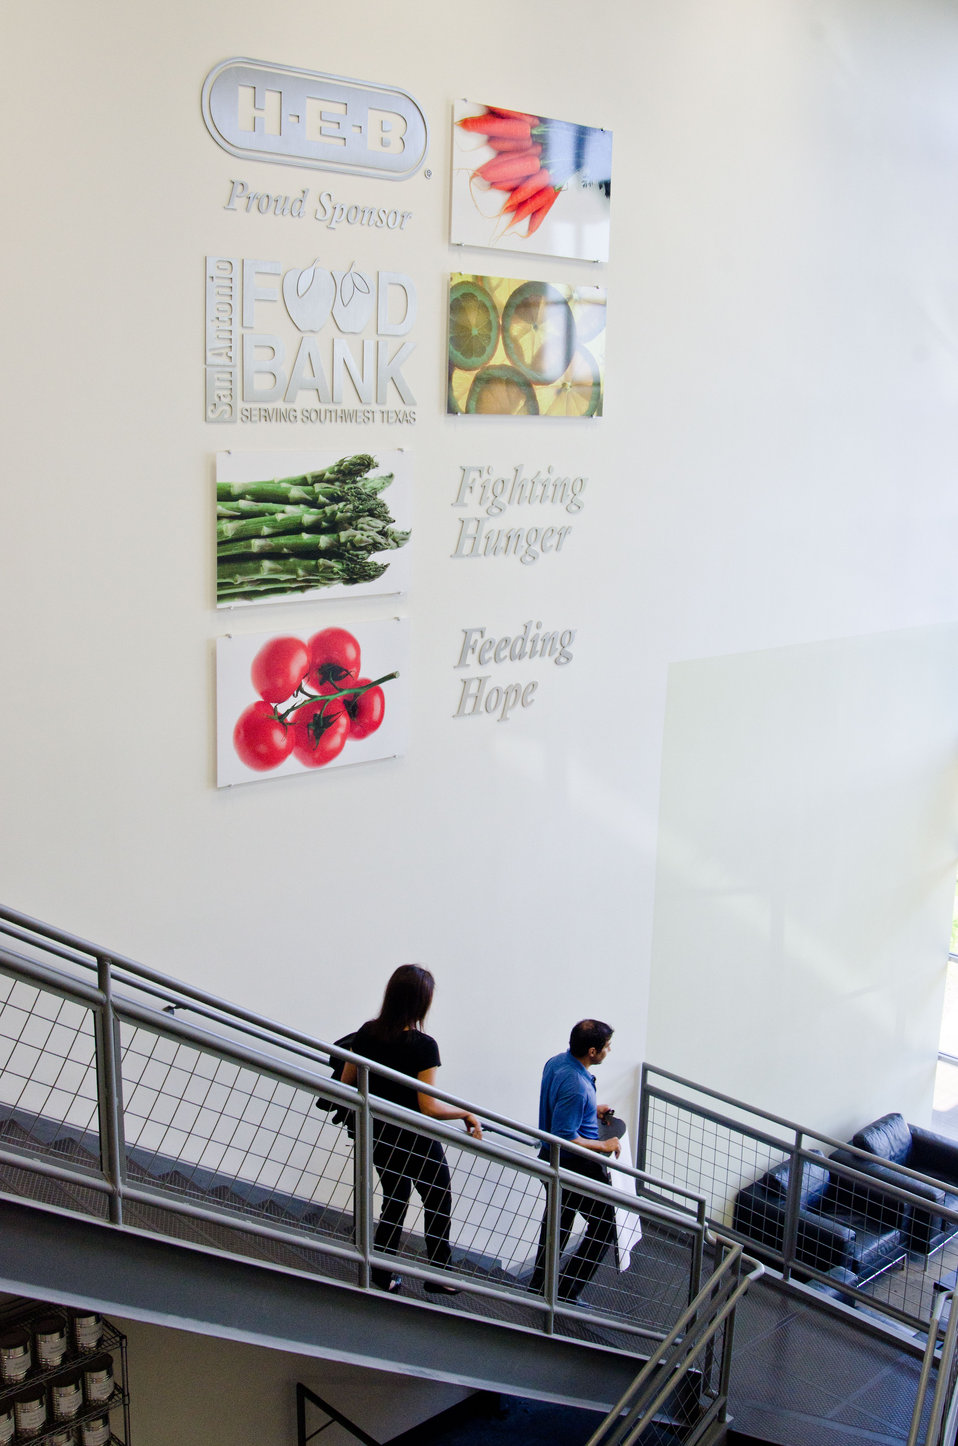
The reception area of the San Antonio Food Bank (SAFB) is an open spacious area that leads directly to classrooms, and the service offices of this non-profit organization that serves as a clearing house by receiving and storing truckloads of donated food, produce, and other grocery products in San Antonio TX, on Monday, October 31, 2011. SAFB distributes these items to over 500 service agencies that help people in need.
“We couldn’t do what we do without our partnership with USDA’” said President and CEO Eric Cooper. He continues, “We are privileged in partnering (with the USDA) to feeding kids, through the summer, with the Summer Food Service Program, and throughout the year, with the Child and Adult Care Feeding Program (CACFP). Then in our approach to feeding seniors, we partner with USDA in the Commodities Supplemental Food Program (CSFP), and the Senior Farmer’s Market (Nutrition) Program. And then work to bring all our (needy) parties together with our Supplemental Nutrition Assistance Program (SNAP) Outreach. You know, once families have access to food we believe it is important to educate them. Through the support of the SNAP-Education Program we are able to educate them during their time of need. With this comprehensive approach we are really able to get the right food, at the right amount, at the right time, to needy families throughout our community – which allows us to feed the fifty-eight thousand we do, each week.”
SAFB serves 16 counties in Southwest Texas and states, “Nearly one out of every four children and one out of every five adults in Southwest Texas lives in poverty and has difficulty meeting basic nutritional needs.” According to SAFB, sixty-five percent of the people requesting emergency food have children. “Additionally, the senior citizens and those living on a fixed income generally have limited funds for a consistent grocery budget.”
San Antonio is the seventh largest city in the nation with surrounding farms and ranches near its rivers and water supplies. When available they provide fresh surplus produce. Other commodities come from the food industry and manufacturers. The major food brand companies that for various reasons have surplus commodities donate it to SAFB.
The United States Department of Agriculture donates commodities through programs such as The Emergency Food Assistance Program (TEFAP), while Texas farmers supply fresh produce to their Fresh Produce Program.
Public donations come in the form of money, food, volunteer time, and advocacy. Their fleet of trucks to pickup and deliver food as needed.